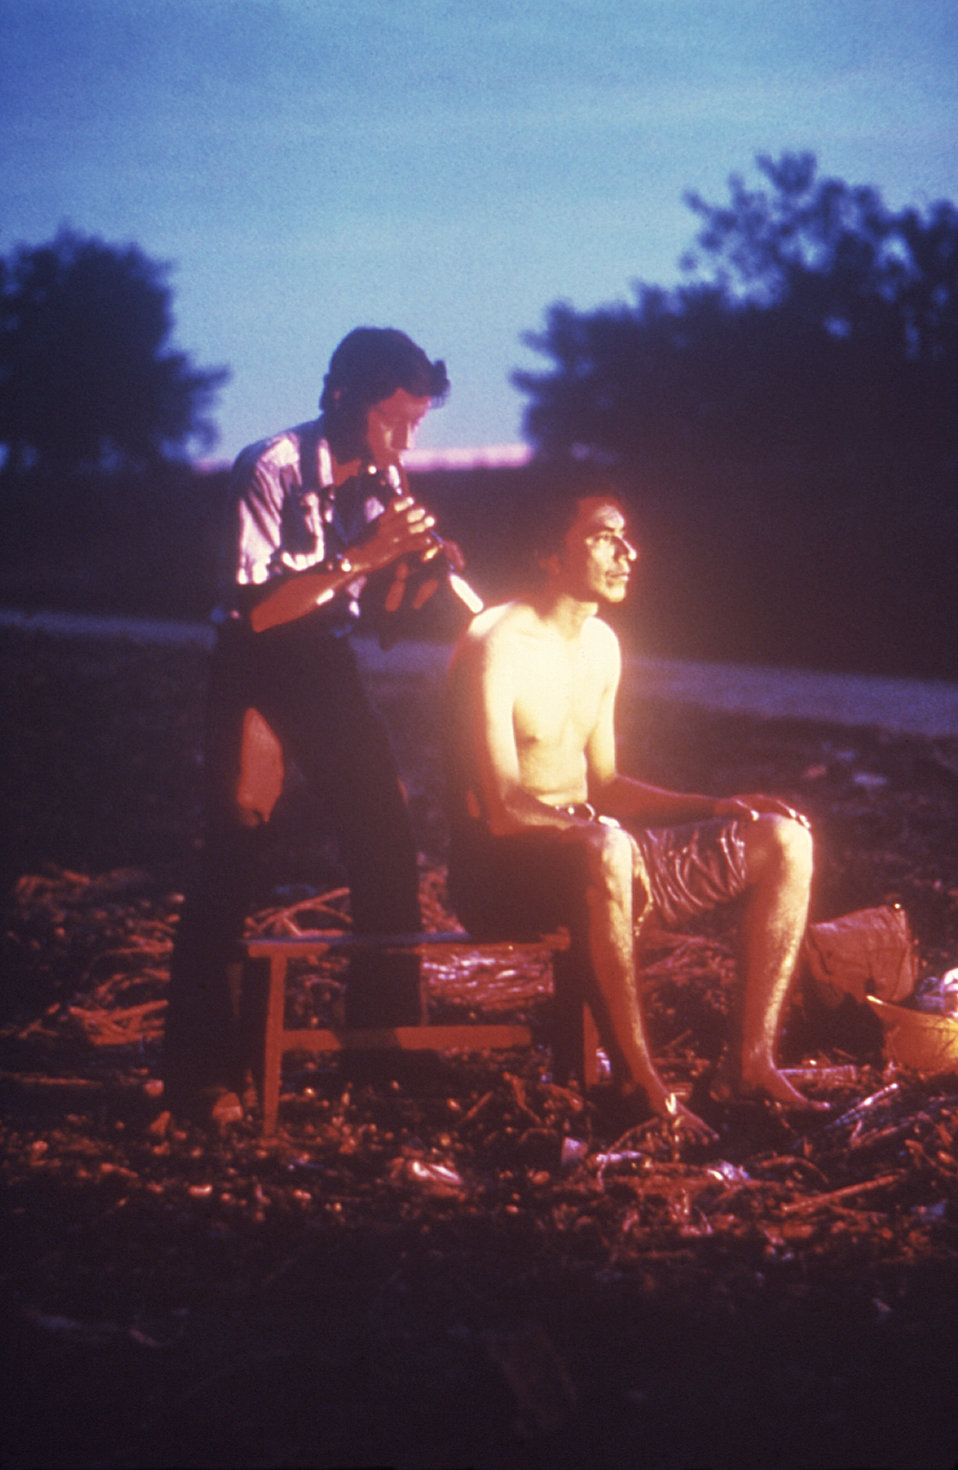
This 1981 photograph captured during the early evening hours, depicts a field researcher using a hand-held manual suction aspirator, in order to collect mosquitoes that had landed on the back of a seated man acting as an arthropodal host.